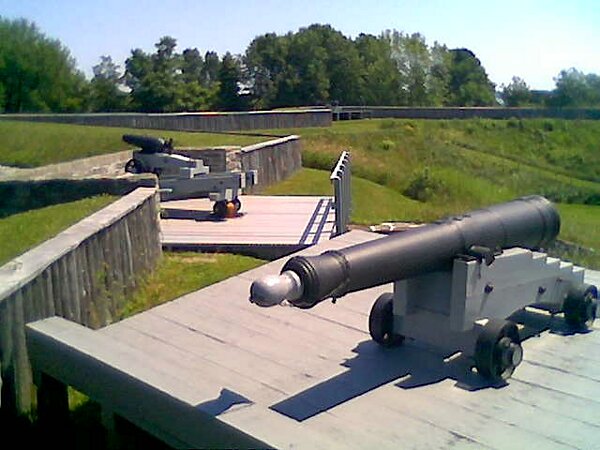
12 pounder and carronade.